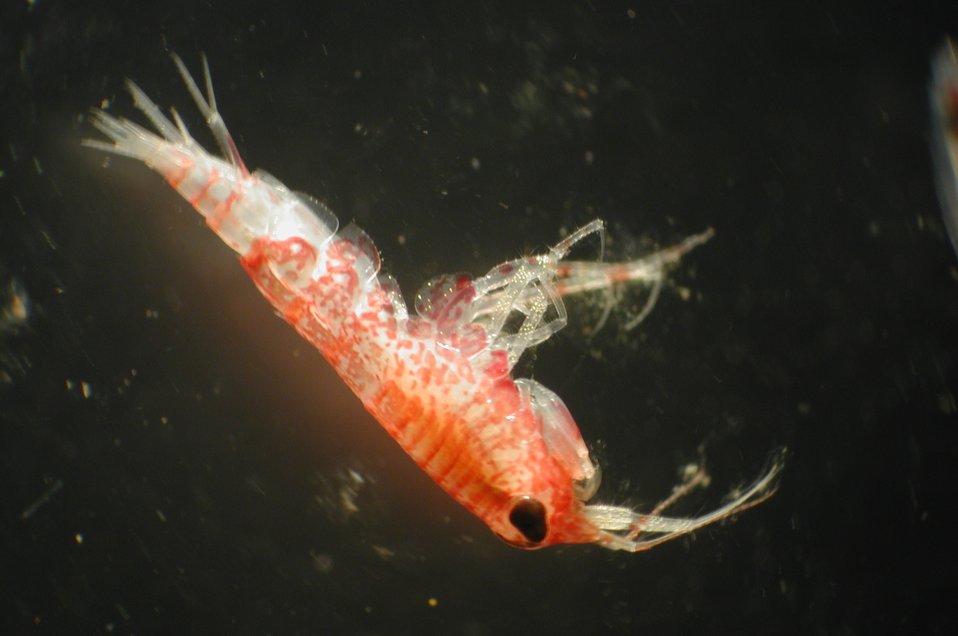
Zooplankton. Copepod.